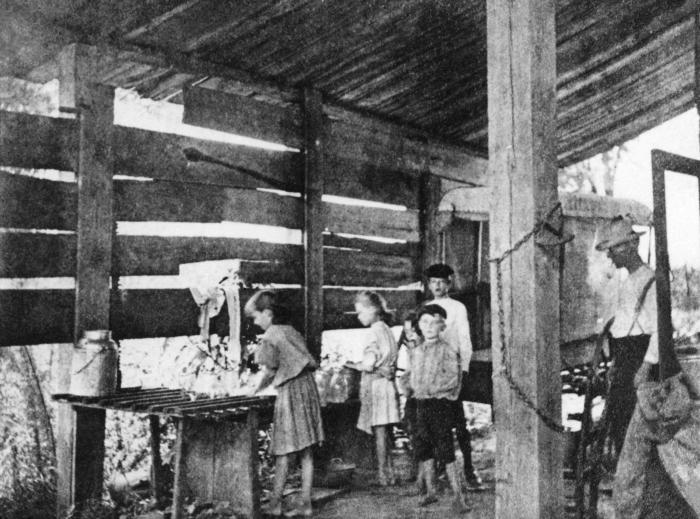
This historic 1908 photograph showed some of the former problems found with what was a typically unsanitary milk house. In this case, the image depicted children who'd been entrusted with the important work of 'sanitizing' milk bottles. The point of the image, and its description, was to bring to light the public endangerment brought on by the efforts to reduce costs by using unskilled labor, which turned out to be counter-productive when the producer's milk was shown to be contaminated.